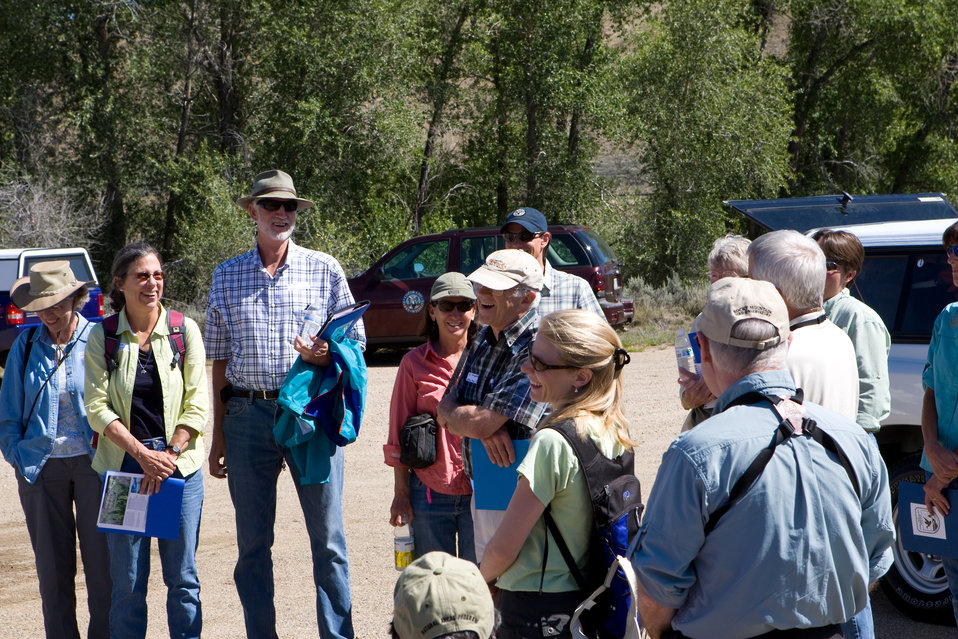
Colorado Rare Plant Conservation Initiative

The Colorado Rare Plant Conservation Initiative (RPCI) is a partnership of 23 statewide and regional agencies, private organizations, and academic institutions working to conserve 121 rare plants in Colorado. As part of these efforts the group developed the Colorado Rare Plant Conservation Strategy, developed Best Management Practices to reduce energy development impacts, addressed climate change, and developed focused strategies for the conservation of individual species at eight priority landscapes. The group has also worked to coordinate volunteer efforts for plant conservation across the state.